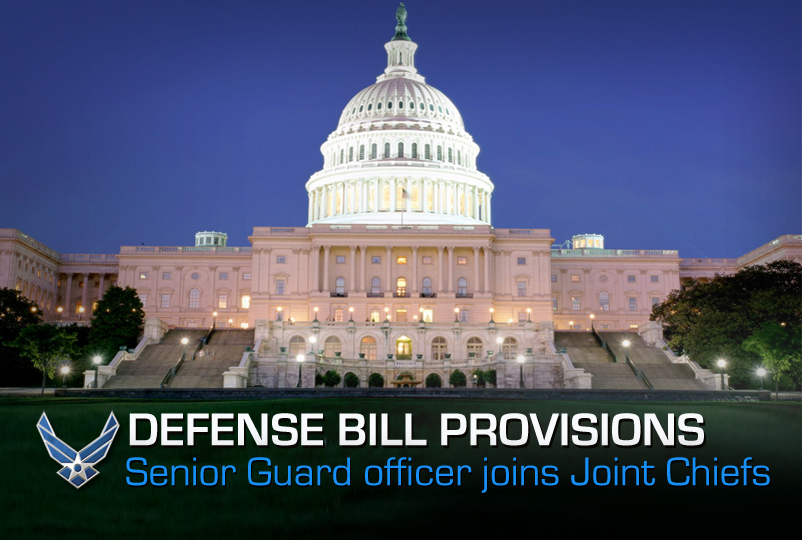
Defense Bill Provisions